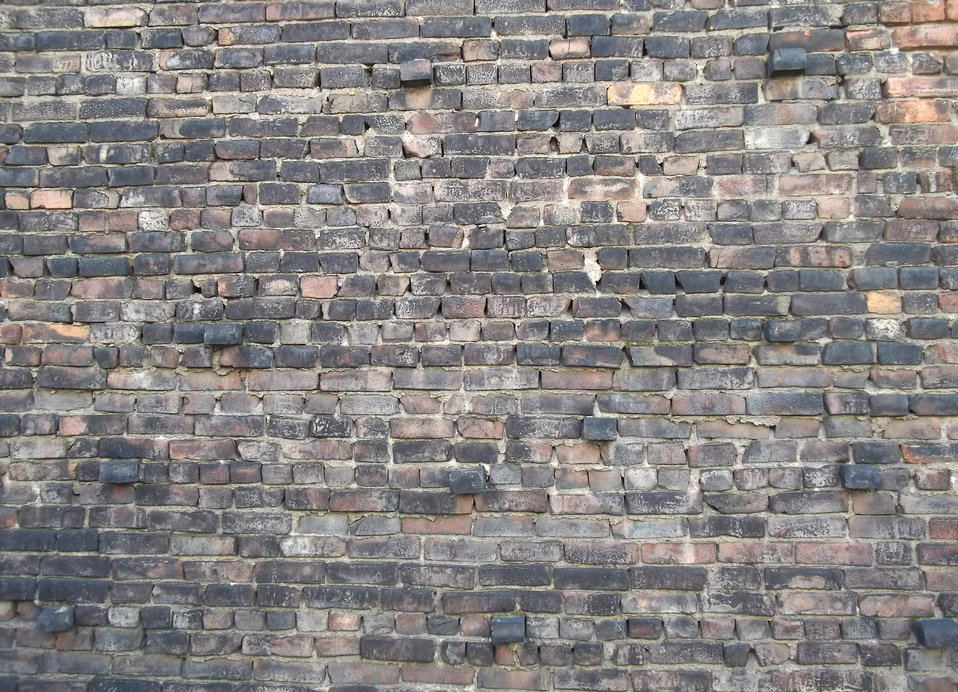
Brick background

An old brick wall.